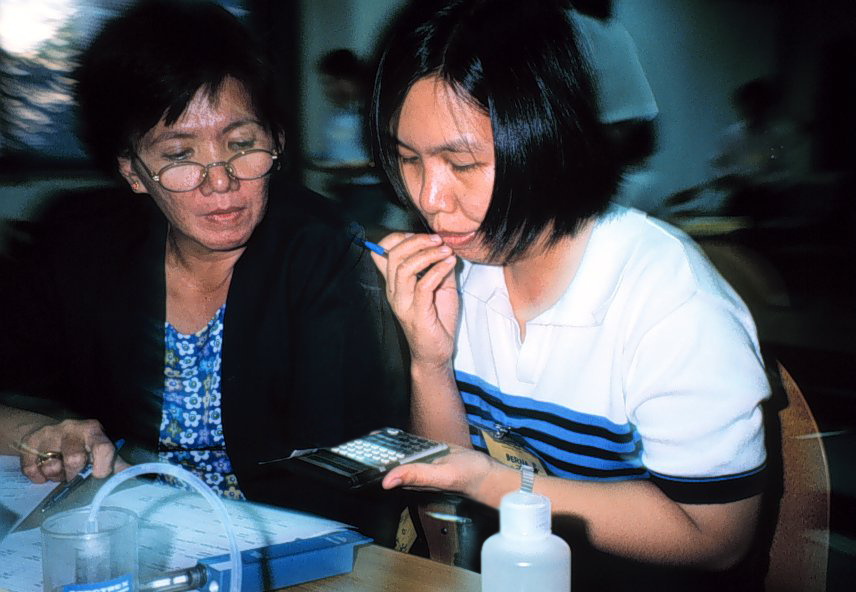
This 1998 photograph shows two inspectors from the Philippines Department of Labor and Employment taking part in a hands-on industrial hygiene sampling course.